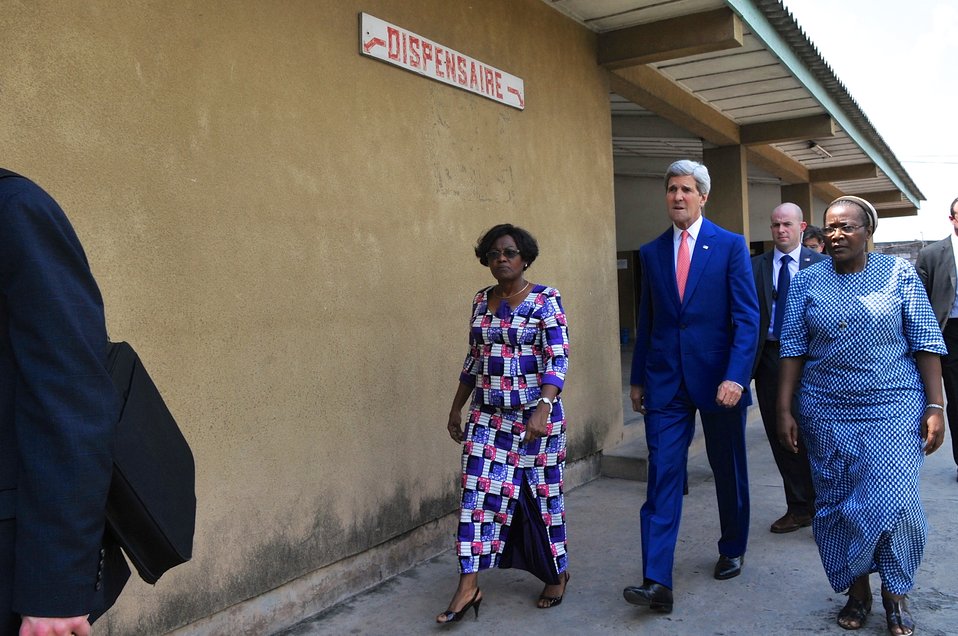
Secretary Kerry Tours Hospital Providing USAID-Funded Fistula Services in Kinshasa

Dr. Dolores Nembunzu and Sister Maie-Joseph Mayina escort U.S. Secretary of State John Kerry as he tours St. Joseph's Hospital and its USAID-funded Fistula Clinic in Kinshasa, Democratic Republic of Congo, on May 4, 2014.